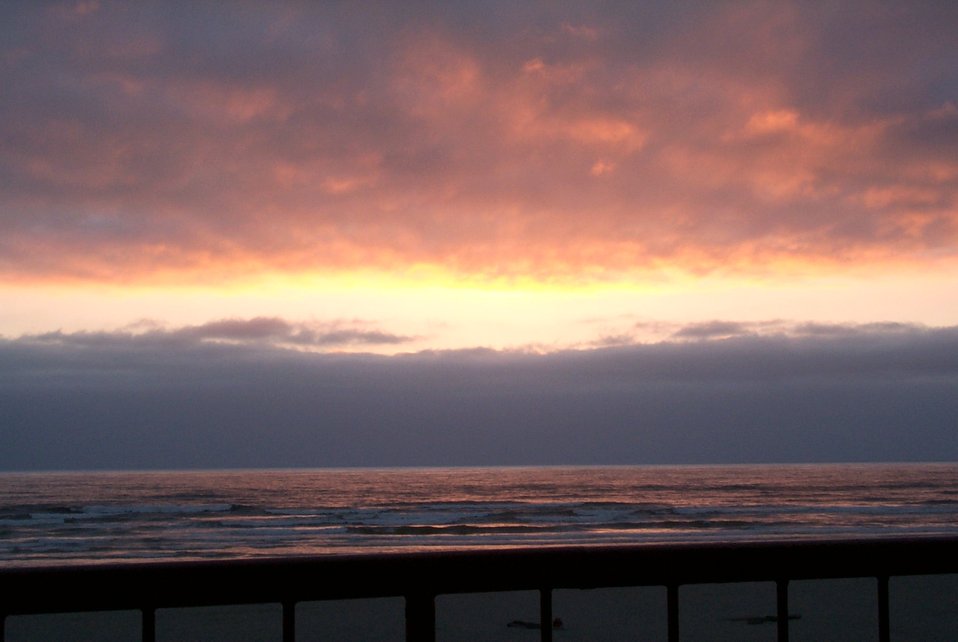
Sunset at Seaside.